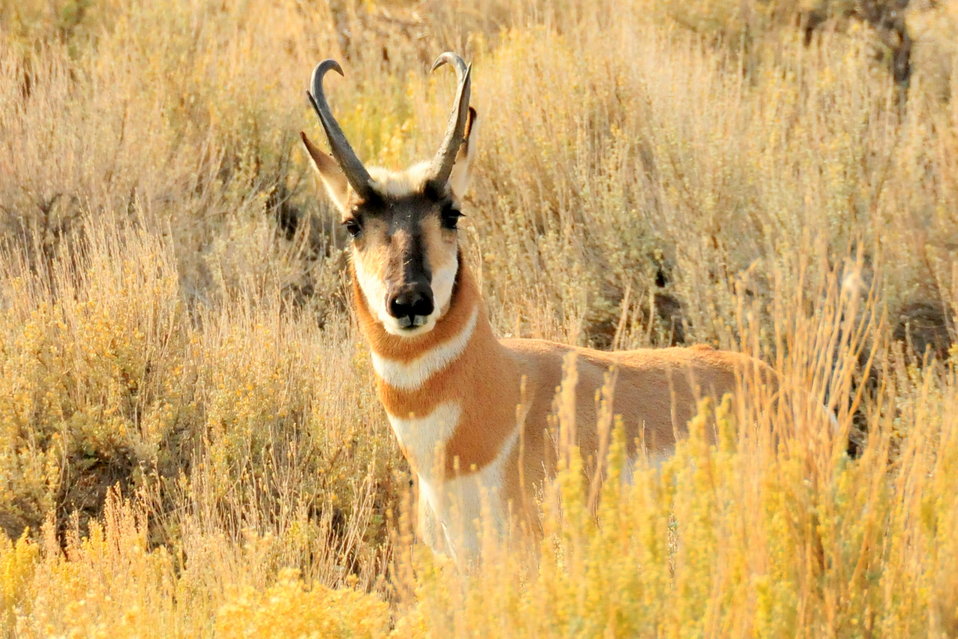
Pronghorn Buck Seedskadee NWR 4